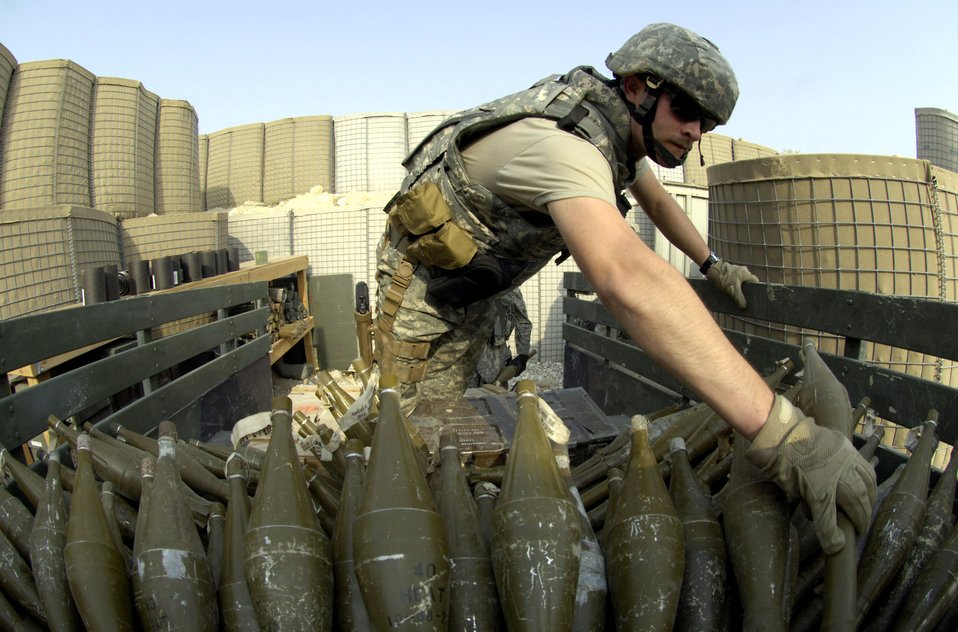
Small rewards program results in big explosion

An Air Force explosive ordnance disposal specialist readies ammunition for a controlled detonation Sept. 1 at Forward Operating Base Mehtar Lam, Afghanistan. Nearly 900 pounds of small arms ammunition, rocket-propelled grenades and mortars were turned in by provincial citizens.